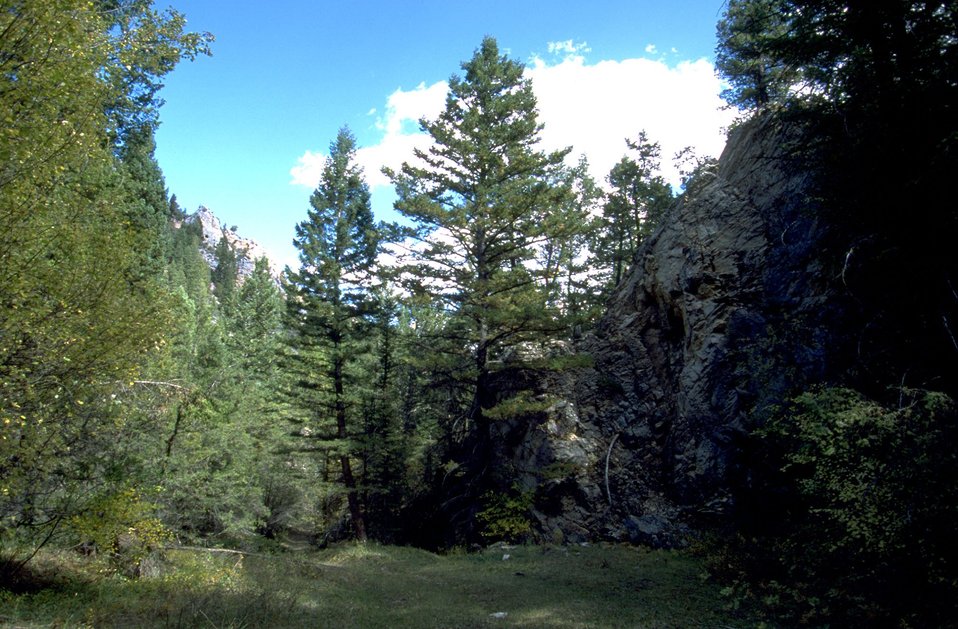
Trees in Lauren Canyon